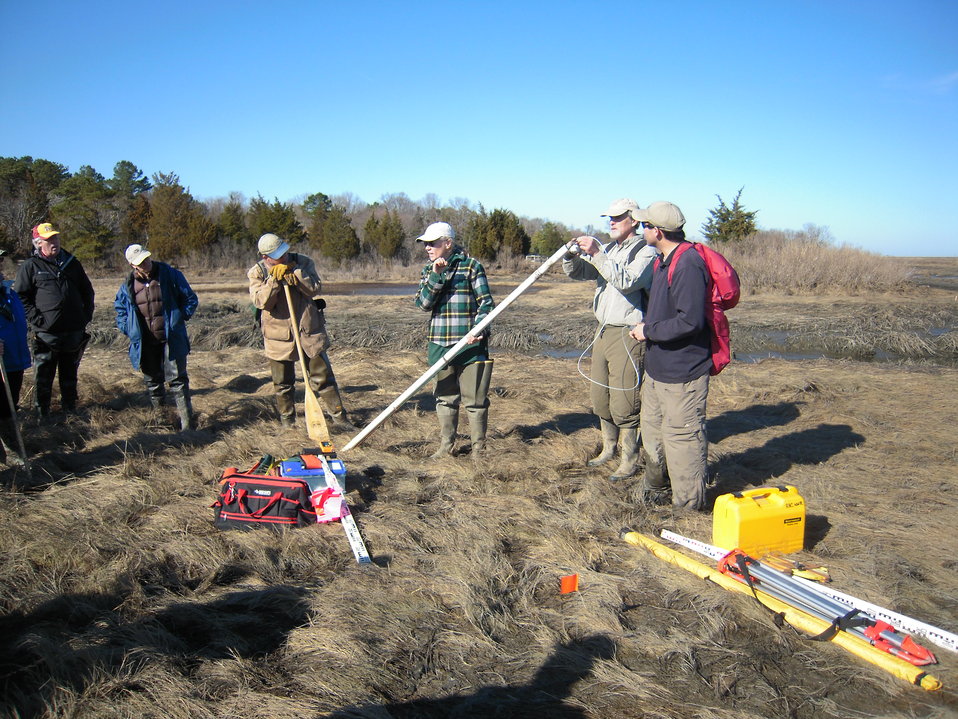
Conducting Field Work

Prof. Burdick conducts field work during the Salt Marsh workshop.